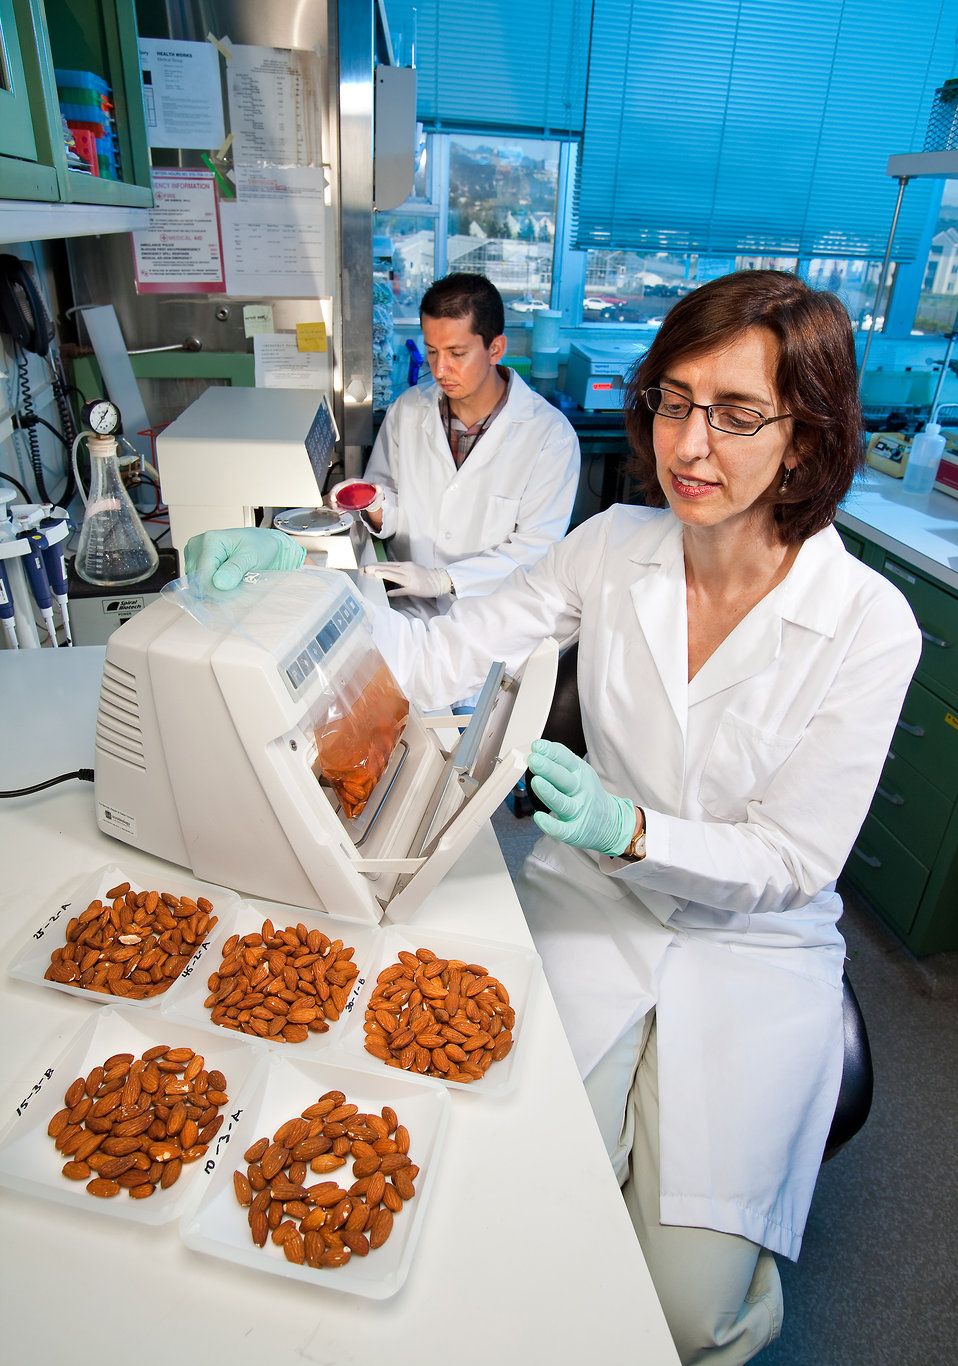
U.S. Department of Agriculture (USDA) Agricultural Research Service (ARS) microbiologist Maria Brandl places treated almonds into a washing device, and research associate Gokhan Bingol inspects the wash water for any surviving bacteria on June 19, 2011. Tests were performed to determine the effectiveness of sequential infrared heating and hot air (SIRHA) pasteurization on almonds that were inoculated with bacteria and then treated with SIRHA.